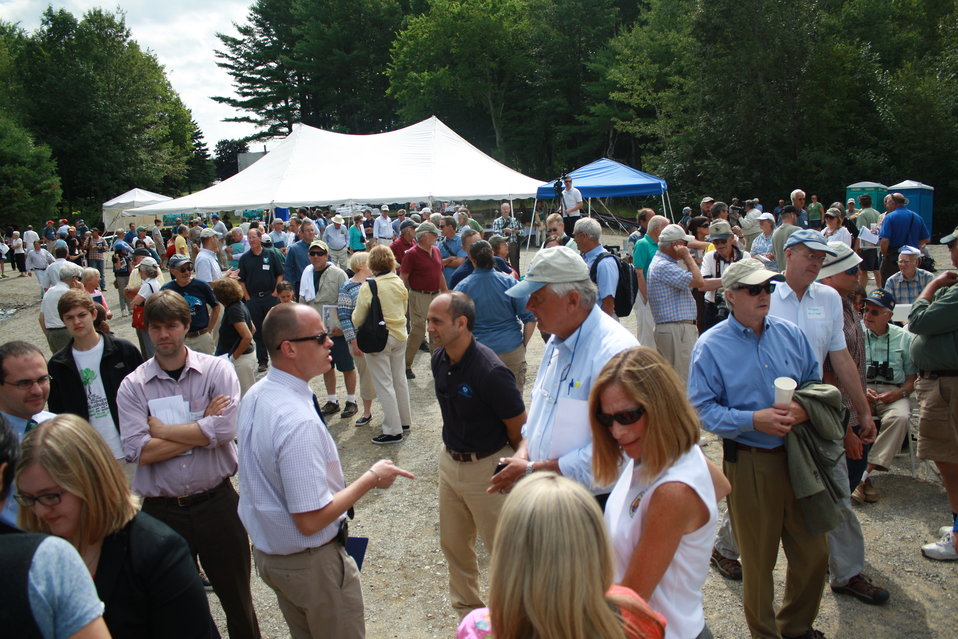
Veazie Dam Removal

People gathering in front of the stage before the press conference.